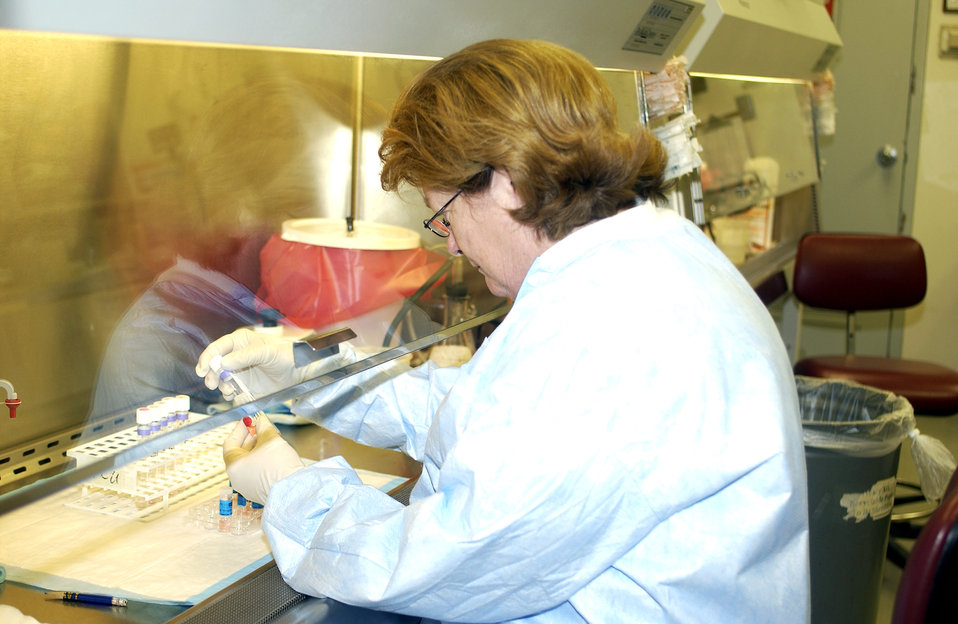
Avian flu

BROOKS CITY-BASE, Texas (AFPN) -- Lee Noel studies influenza strain samples. Mr. Noel is a technician at the Air Force Institute for Operational Health virology laboratory here.